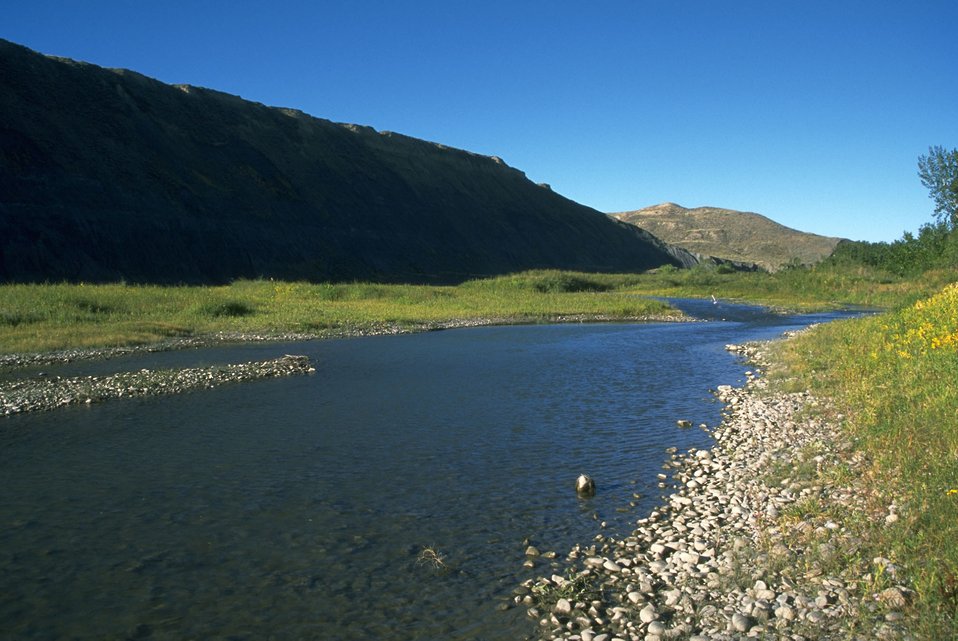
Missouri River near Fort Benton